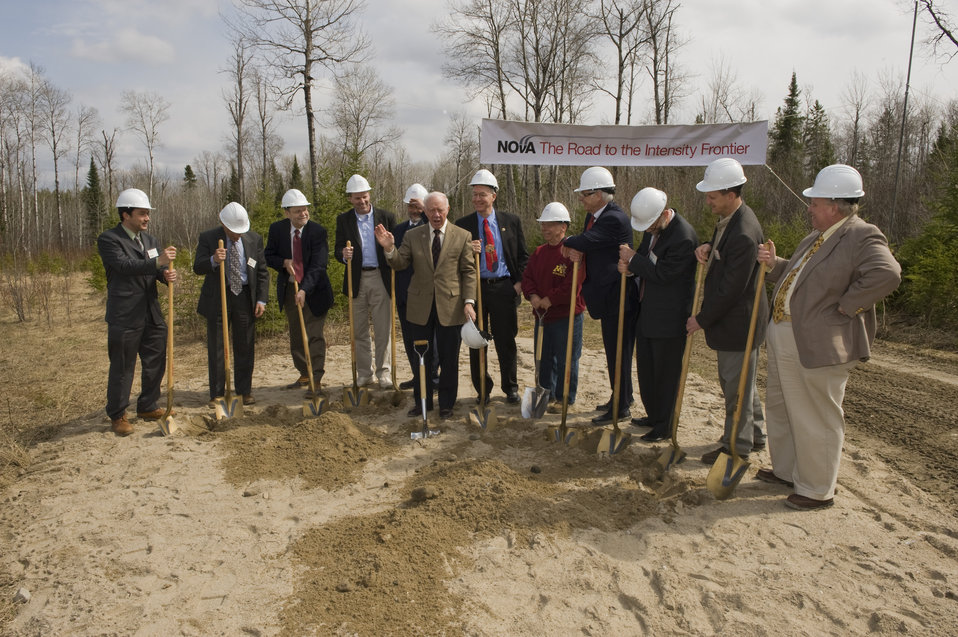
Groundbreaking ceremony for the Nova Detector at Ash River, Minnesota.

Congressman James Oberstar of Minnesota and Congressman Bill Foster of Illinois joined officials from DOE, Fermi National Accelerator Laboratory and the University of Minnesota to break ground for NoVA, the world's most advanced neutrino experiment. The lab will house a 15,000 ton particle detector that will investigate the role subatomic particles called neutrinos in the origin of the universe. The construction of the facility is supported under a cooperative agreement for research between DOE and the University of Minnesota. The construction will result in procurement for concrete, steel, road building materials and mechanical and electrical equipment from the U.S. firms. The NoVA project involves about 180 scientist and engineers from 28 institutions.